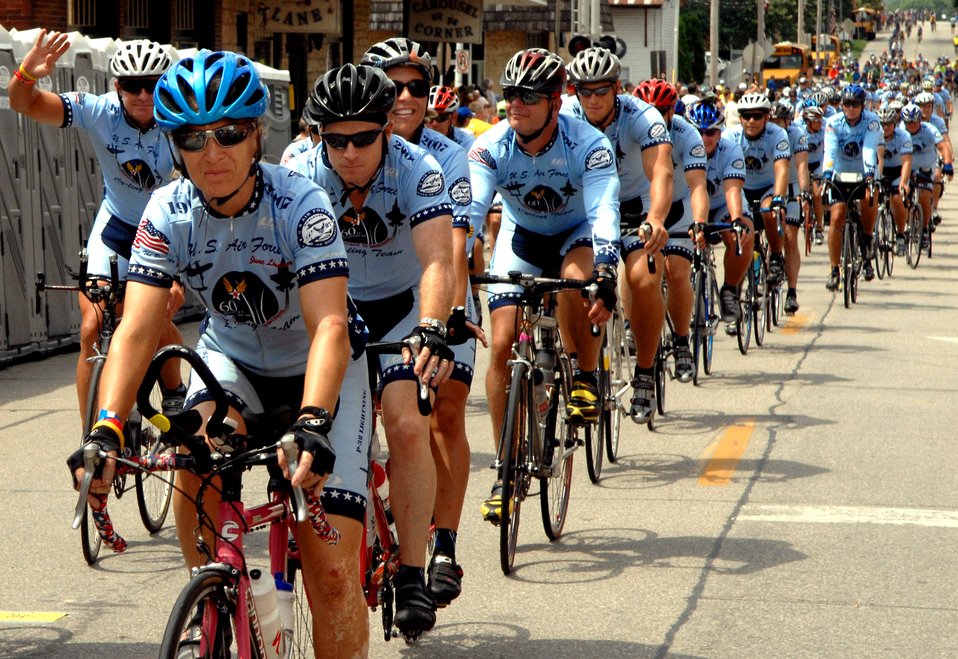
Riding across Iowa

Members of the Air Force Cycling Team ride into Bellevue, Iowa, as they complete the Des Moines Register's Annual Great Bicycle Ride Across Iowa, or RAGBRAI, July 28. Team members completed seven days of riding, maintaining an average of 70 miles a day, across the state of Iowa.